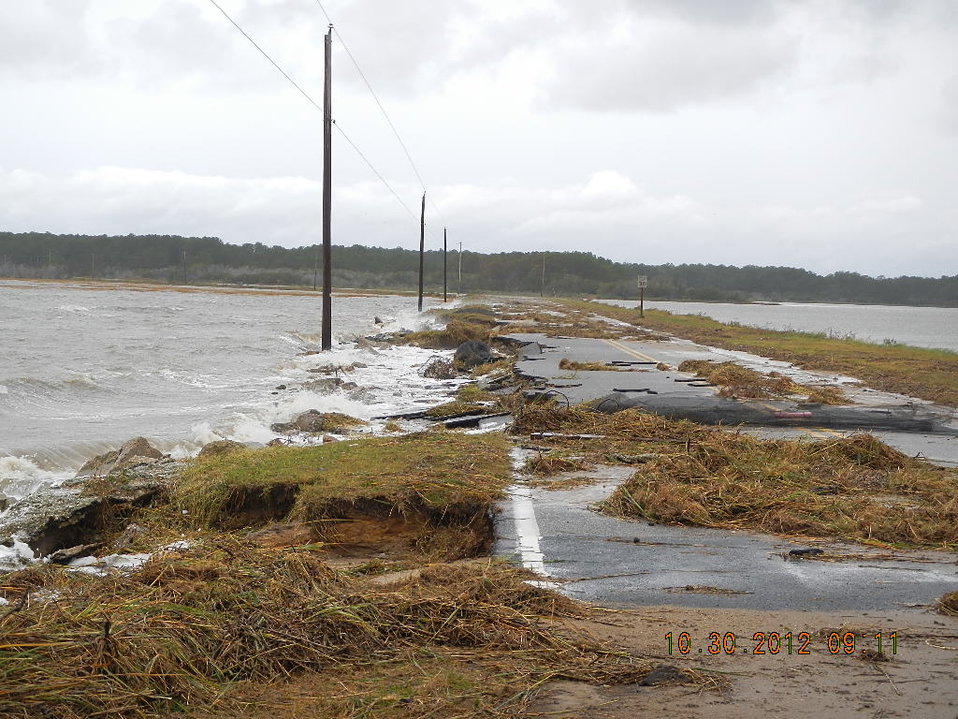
Hurricane Sandy hit Chincoteague National Wildlife Refuge (VA)

Heavy damage occurred to the road leading to the Toms Cove Visitor Center.